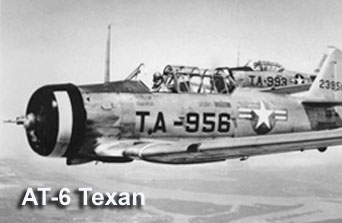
AT-6 Texan

The AT-6 Texan was used as a trainer during and after World War II. In 1943 to counteract joking by Allied pilots at an instrument flying school that the trainer was